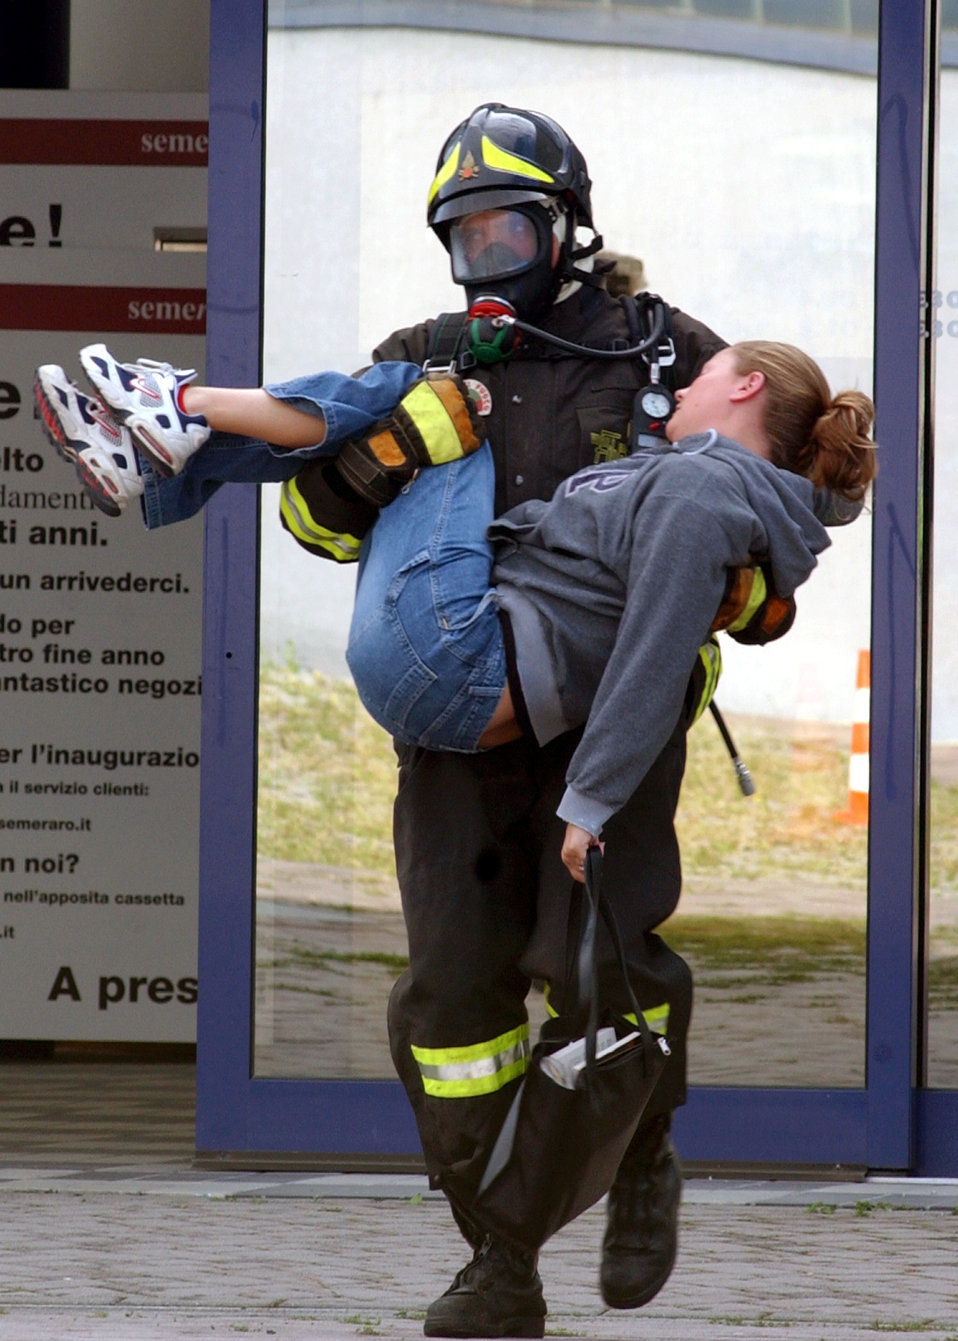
Italians, Americans work together in mass casualty exercise

ROVEREDO IN PIANO, Italy -- An Italian firefighter rescues Staff Sgt. Bobbi Gilbert from a local store after she simulates being overcome by toxic fumes during a mass casualty exercise here Sept. 13. The exercise involved Airmen from nearby Aviano Air Base and Italian authorities, and allowed them to practice and strengthen their emergency response skills together. Sergeant Gilbert is assigned to the base's 603rd Air Control Squadron.